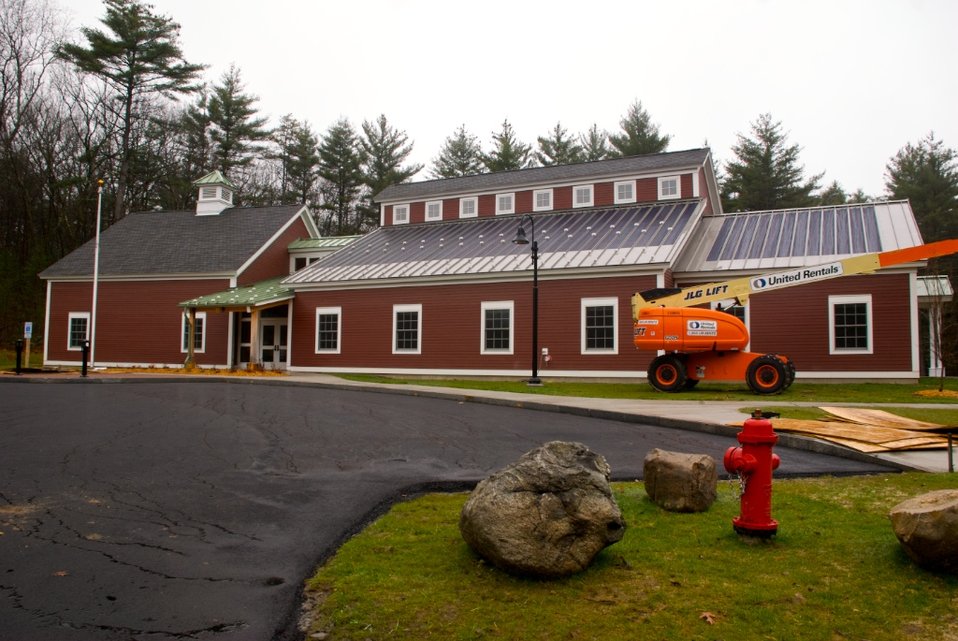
Assabet River NWR Visitor Center

In 2010, the U.S. Fish and Wildlife Service will open the doors to a new energy efficient administrative and visitor center for the Eastern Massachusetts National Wildlife Refuge Complex at the Assabet River refuge in Sudbury, Mass.

American Recovery and Reinvestment Act funding will support the fabrication and installation of exhibits that will enhance visitors' experience with information about the refuge's wildlife, habitats, and recreational opportunities.